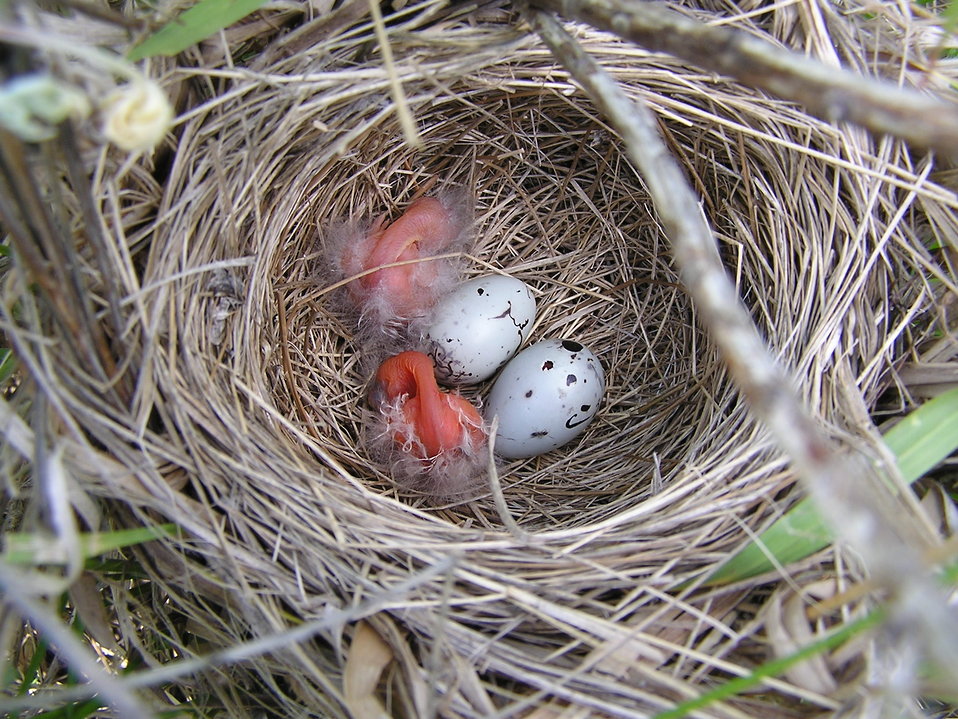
Red-winged Blackbird Nest

Red-winged Blackbirds frequently nest near wetlands on emergent vegetation (like cattails) or in nearby shrubs or woody vegetation. These chicks were just hatching when found on Ernst WPA.